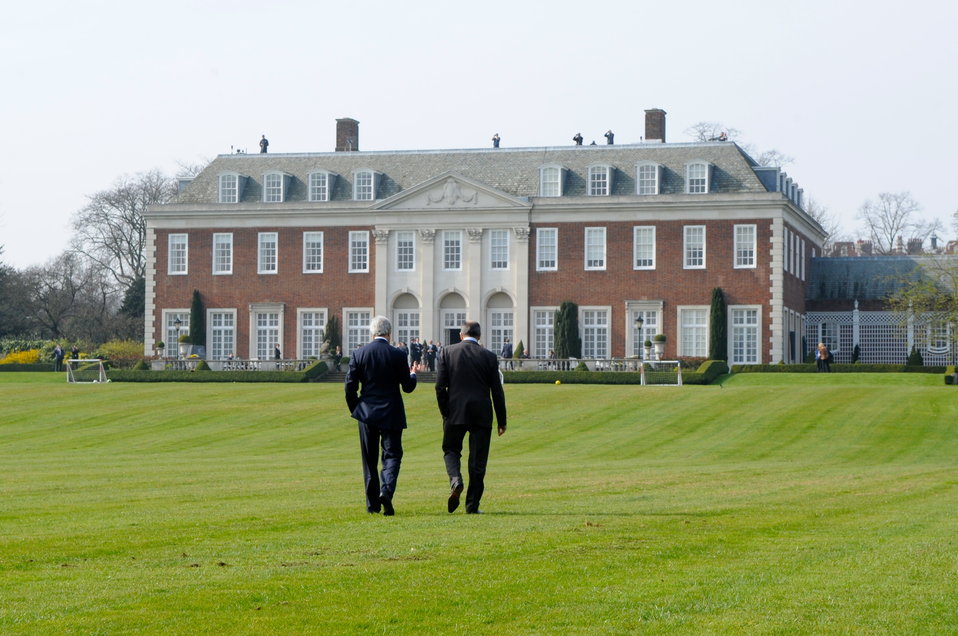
Secretary Kerry, Russian Foreign Minister Lavrov Hold One-on-One Discussion in London About Ukraine

U.S. Secretary of State John Kerry and Russian Foreign Minister Sergey Lavrov walk across the lawn at Winfield House, the U.S. Ambassador's Residence in London, United Kingdom, on March 14, 2014, as they hold a one-on-one discussion about de-escalating tensions in Ukraine.